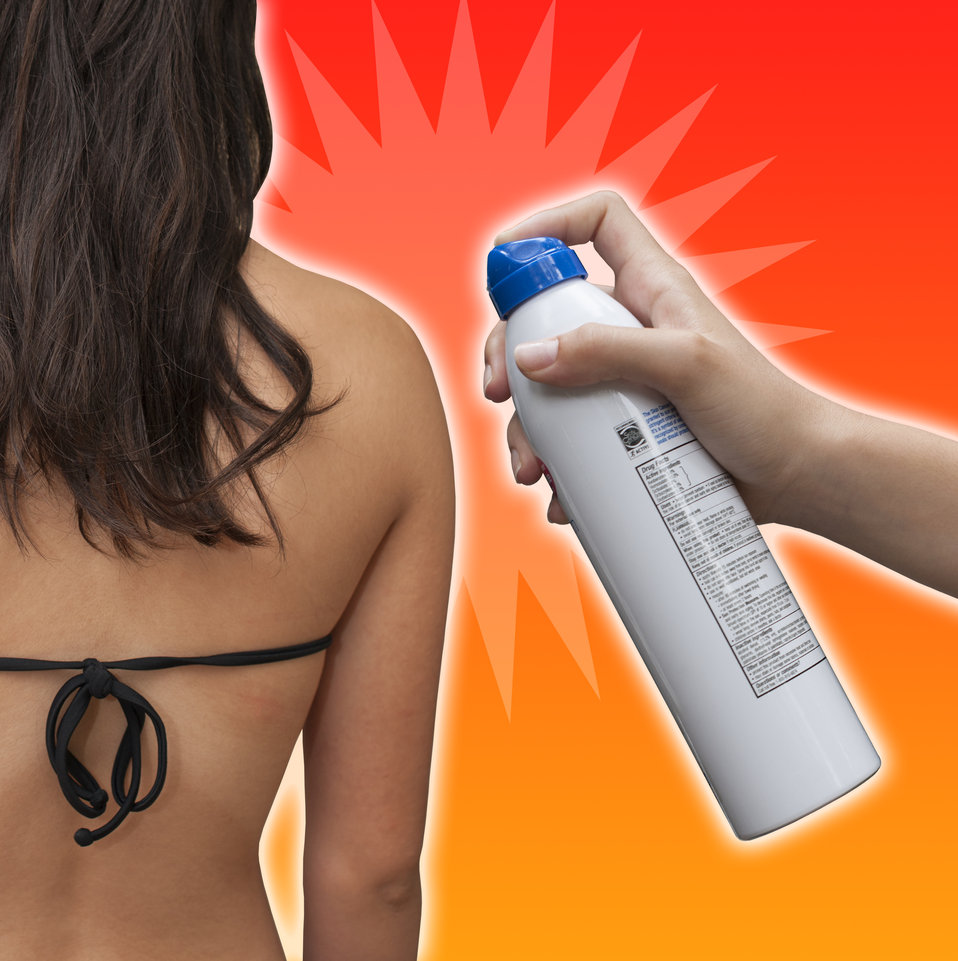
Use Sunscreen Spray? Avoid Open Flame

In 2012, FDA received reports of five separate incidents in which people wearing sunscreen spray near an open flame actually caught fire. To learn more, including how to use sunscreen spray safely and avoid potential harm, read this FDA Consumer Update:

• Use Sunscreen Spray? Avoid Open Flame

This image is free of all copyright restrictions and available for use and redistribution without permission. Credit to the U.S. Food and Drug Administration is appreciated but not required. For more privacy and use information visit: www.flickr.com/people/fdaphotos/

FDA photo illustration by Michael J. Ermarth